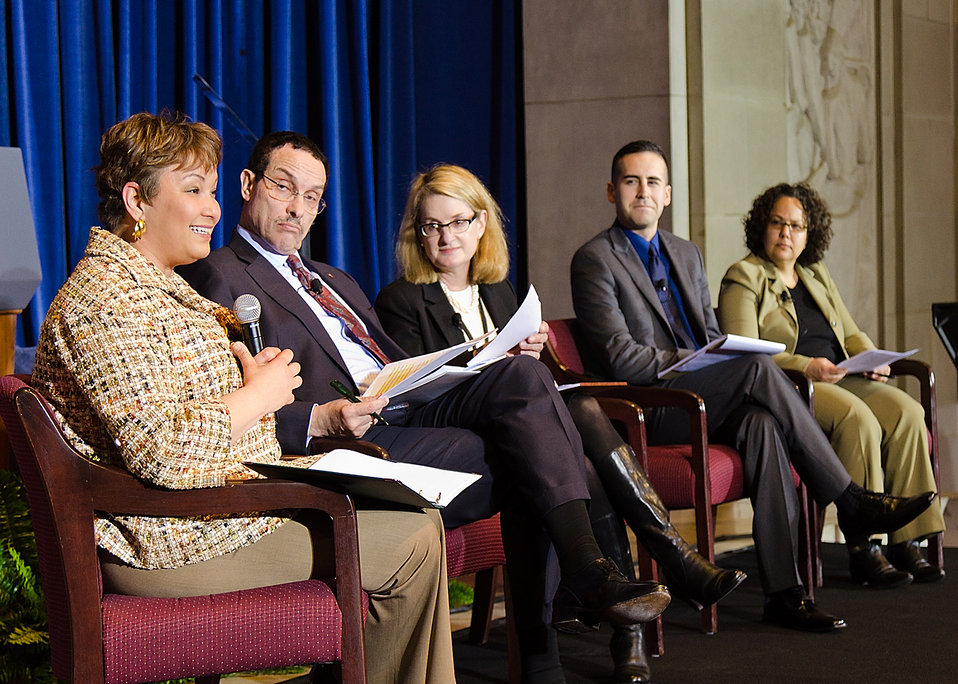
From left: Environmental Protection Agency Administrator Lisa Jackson, Washington, D.C. Mayor Vincent Gray, Hampton, VA, Mayor Molly Ward, a Park Guide from the Santa Monica Mountains National Recreation Area Thousand Oaks, California Juan Quezada, and Chair, White House Council on Environmental Quality Nancy Sutley participated in the, “Renewing Communities: Connecting People to Nearby Open Spaces” panel during the White House Conservation conference, “Growing America’s Outdoor Heritage and Economy” at the Interior Department, Yates Auditorium in Washington, D.C., on Friday, March 2, 2012. The conference was part of President Barrack Obama’s, “America’s Great Outdoors Initiative” to spotlight community-driven conservation efforts and discussed how to build their success.